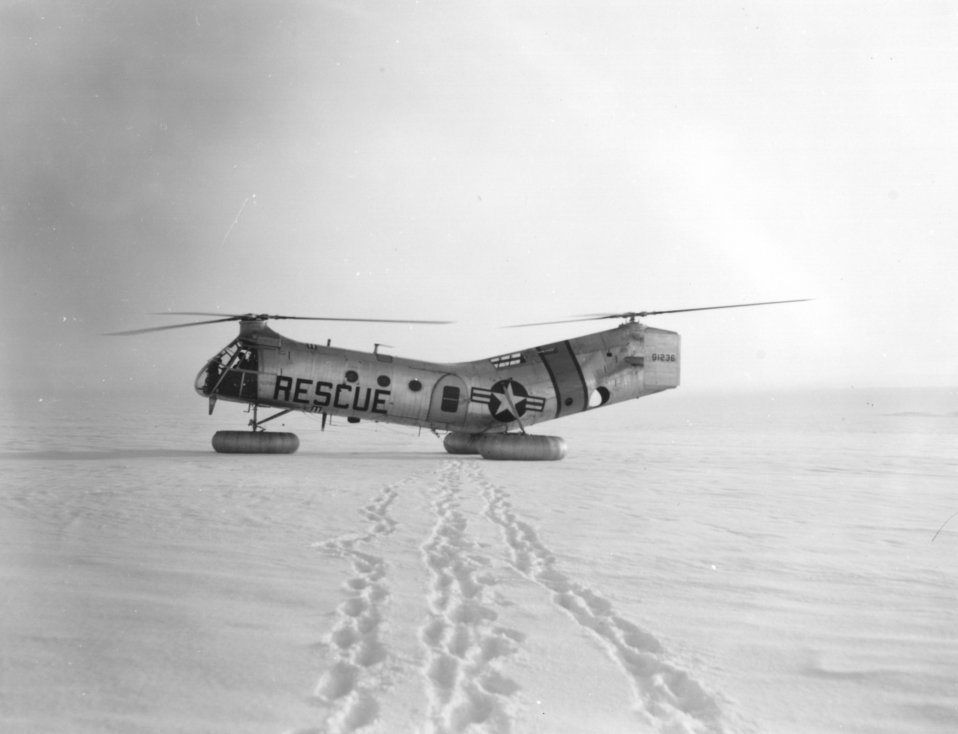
H-21

1950's -- H-21